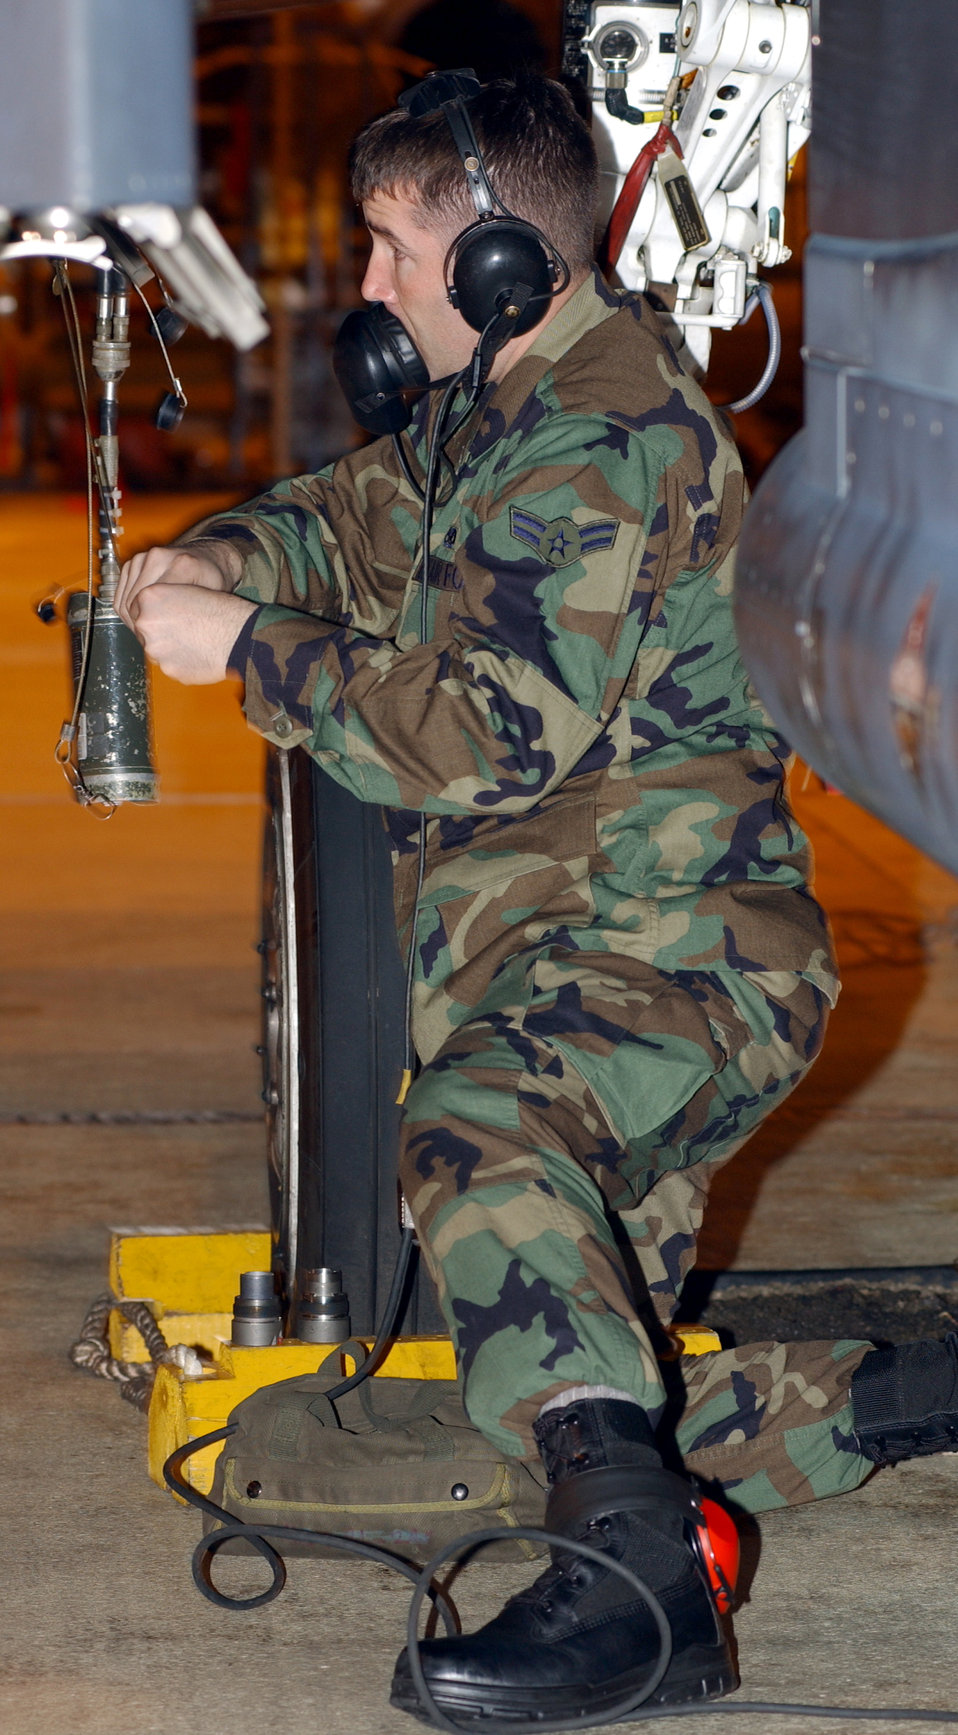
Rackem'

ROYAL AIR FORCE LAKENHEATH, England -- Airman 1st Class Shane Law moves a BRU-47 bomb rack April 7 during a weapons training exercise. Airman Law is an aircraft armament systems apprentice with the 48th Aircraft Maintenance Squadron. The 48th AMXS is a worldwide-deployable unit which inspects, generates and maintains 82 F-15 Eagle aircraft.